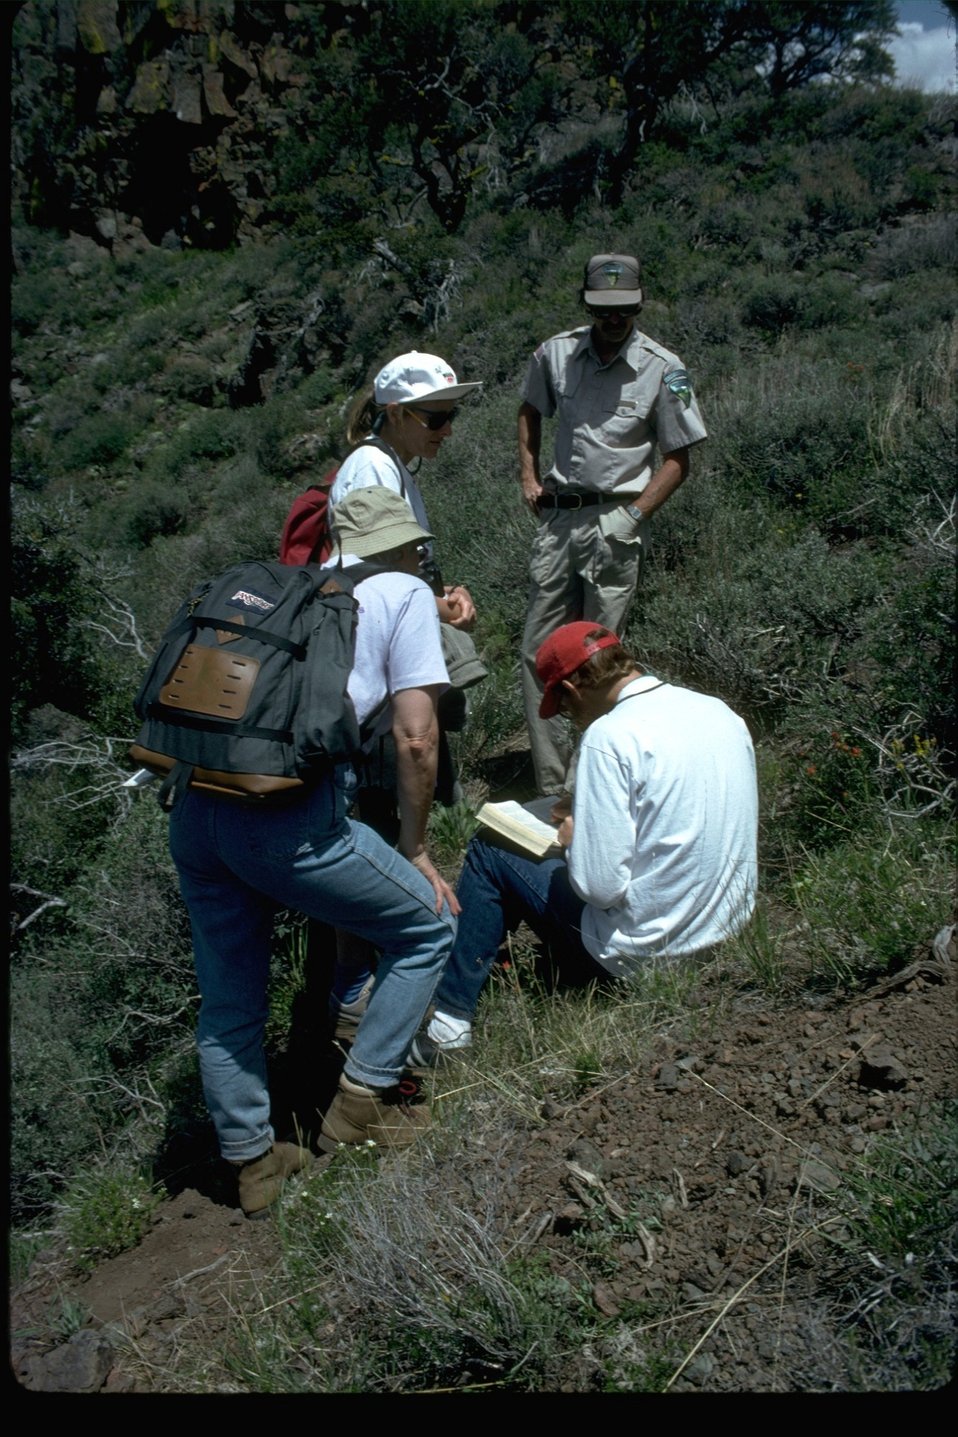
Native Plant Society on a field trip with a BLM employee at Steens Mountain.